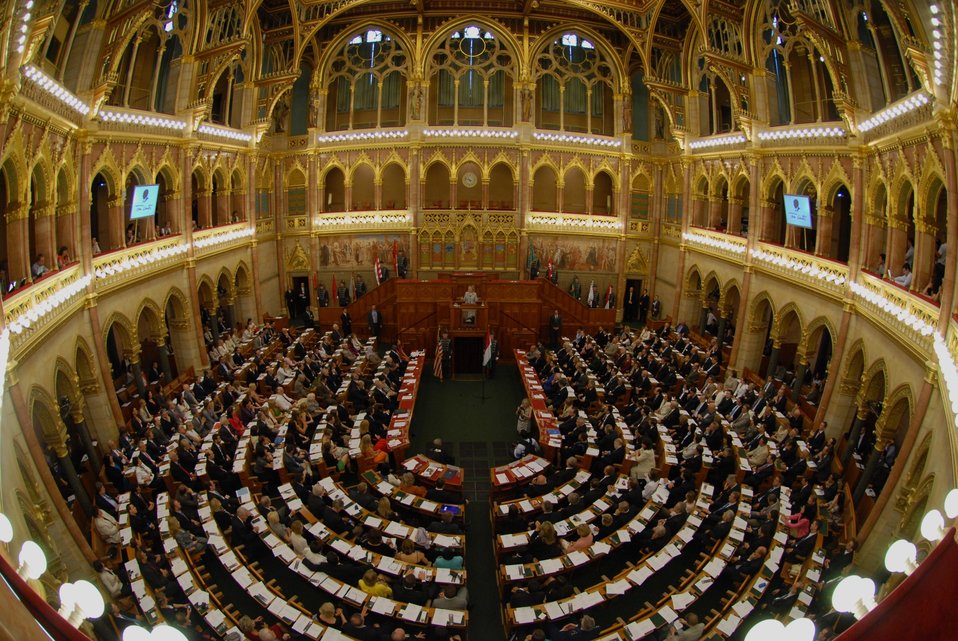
Secretary Clinton Delivers Her Speech During the Inauguration of the Tom Lantos Institute

U.S. Secretary of State Hillary Rodham Clinton delivers her speech during the inauguration of the Tom Lantos Institute in Budapest, Hungary, June 30, 2011.